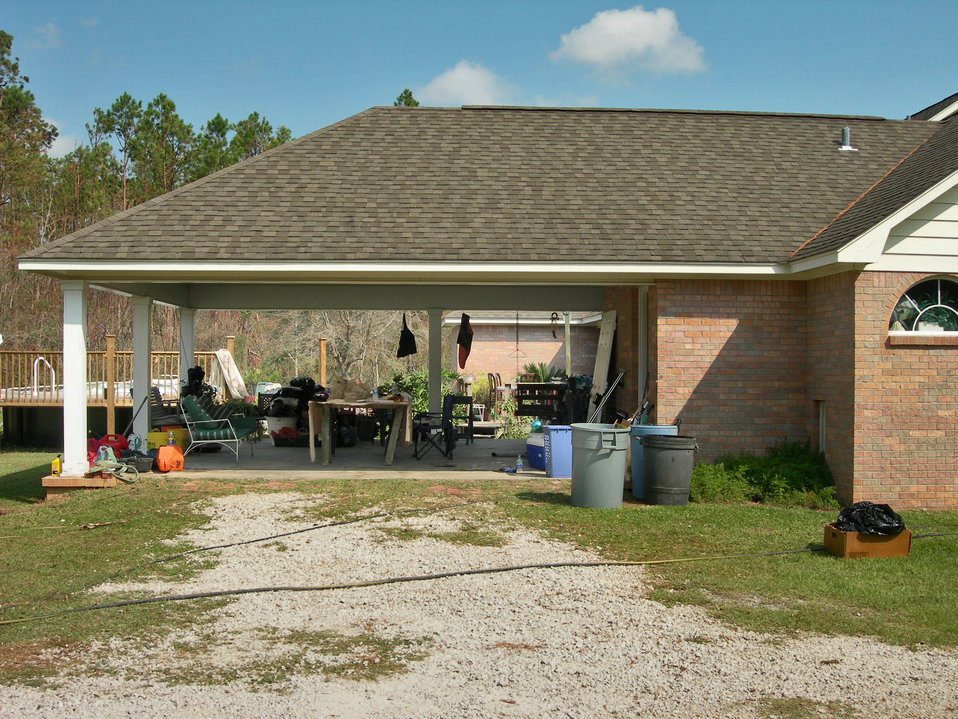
Engineers help clean up

BILOXI, Miss. -- After Hurricane Katrina ravaged the area, Stanley Morgan's home was flooded. Civil engineers who were deployed to nearby Keesler Air Force Base from Luke AFB, Ariz., helped the Morgan clean up the aftermath.